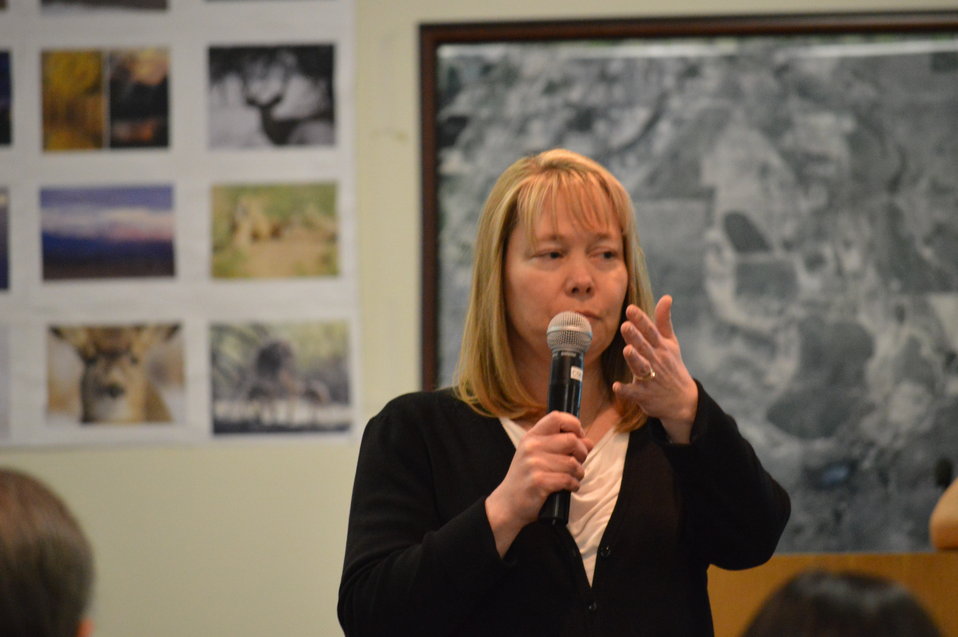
Eagle Summit III

Noreen Walsh (Regional Director) opens up the consultation at the Eagle Summit III in Denver, Colorado on March 20, 2014 at the Rocky Mountain Arsenal National Wildlife Refuge.